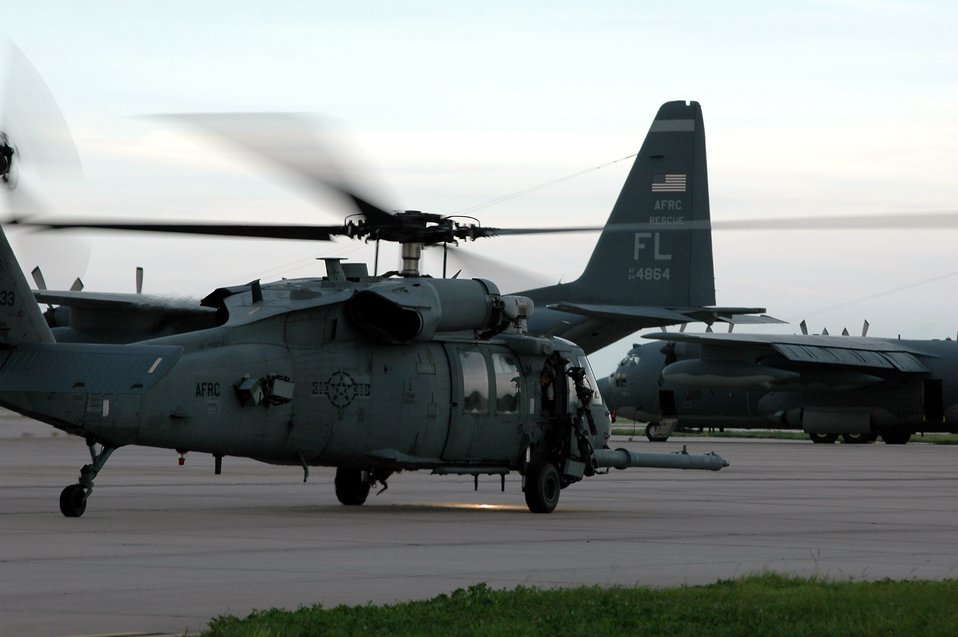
Wing answers call for help for missing diver

A helicopter rescue crews from the 920th Rescue Wing refuels at Patrick Air Force Base, Fla., before heading back out to the Atlantic Ocean off the coast of Cape Canaveral to continue their search efforts for a missing diver July 26.